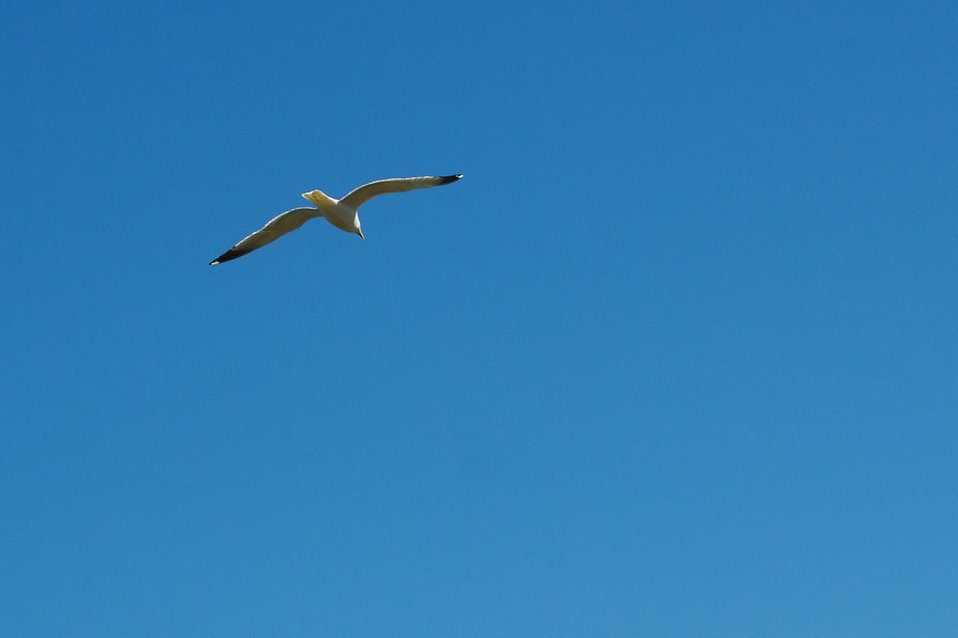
Seagull flying over blue sky.